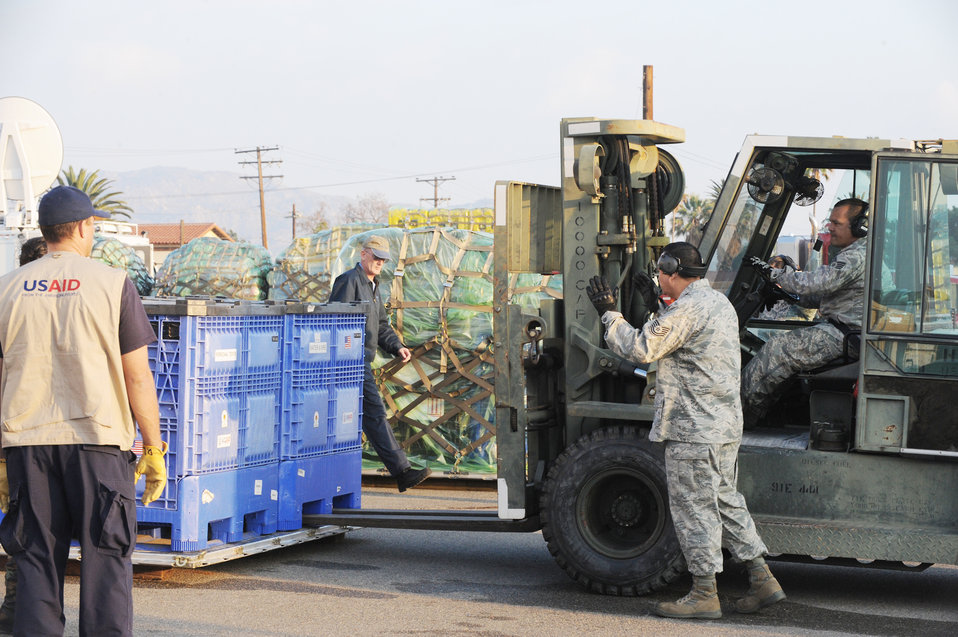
Airmen load C-17s for Haitian relief

Relief workers and search and rescue teams use March Air Reserve Base, Calif., as a staging area to assemble supplies, people and equipment Jan. 13, 2010, following the recent 7.0-magnitude earthquake in Haiti. All will be loaded on a C-17 Globemaster III and flown into Port-au-Prince, Haiti. The aircraft is assigned to the 60th Air Wing at Travis Air Force Base, Calif.,